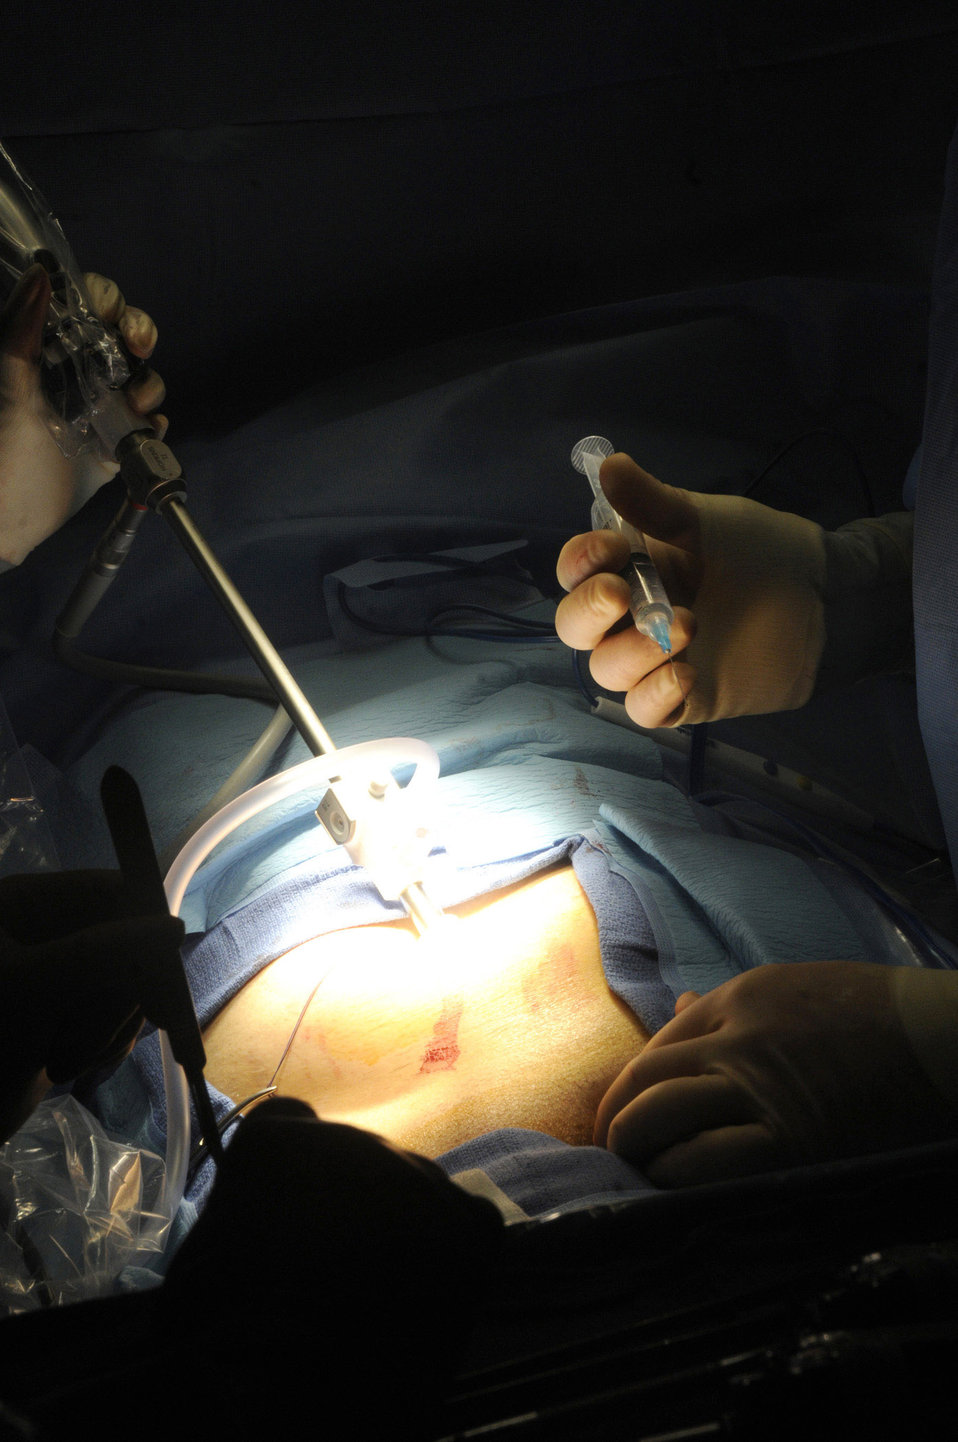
Surgeons return injured troops to action

Senior Airman Brittney Hardrick places a camera inside a patient so Dr. (Maj.) Craig Kolasch, general surgeon, can perform a laparoscopic hernia repair Dec. 23 at an undisclosed air base in Southwest Asia. Airman Hardrick is a surgical technician. Both Airmen are assigned to the 379th Expeditionary Medical Group. Many of the surgeries performed here are hernia repairs. Airman Hardrick is a native of Dayton Ohio, and Major Kolasch, is a native of Great Falls, Va. Both are deployed from Keesler Air Force Base, Miss., in support of Operations Iraqi and Enduring Freedom and Joint Task Force-Horn of Africa.